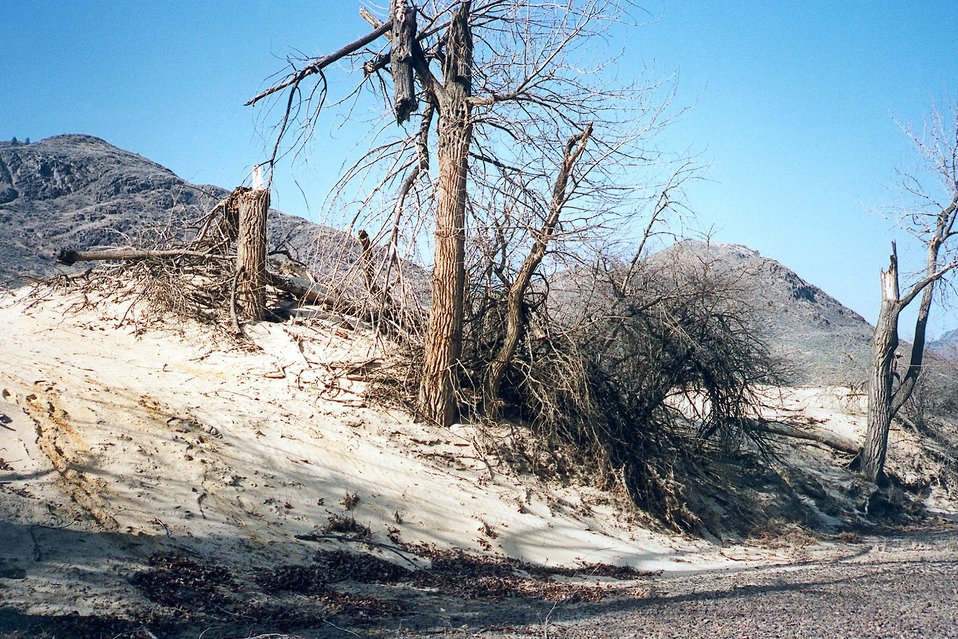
AML. Kaaba-Texas Mine tailings.